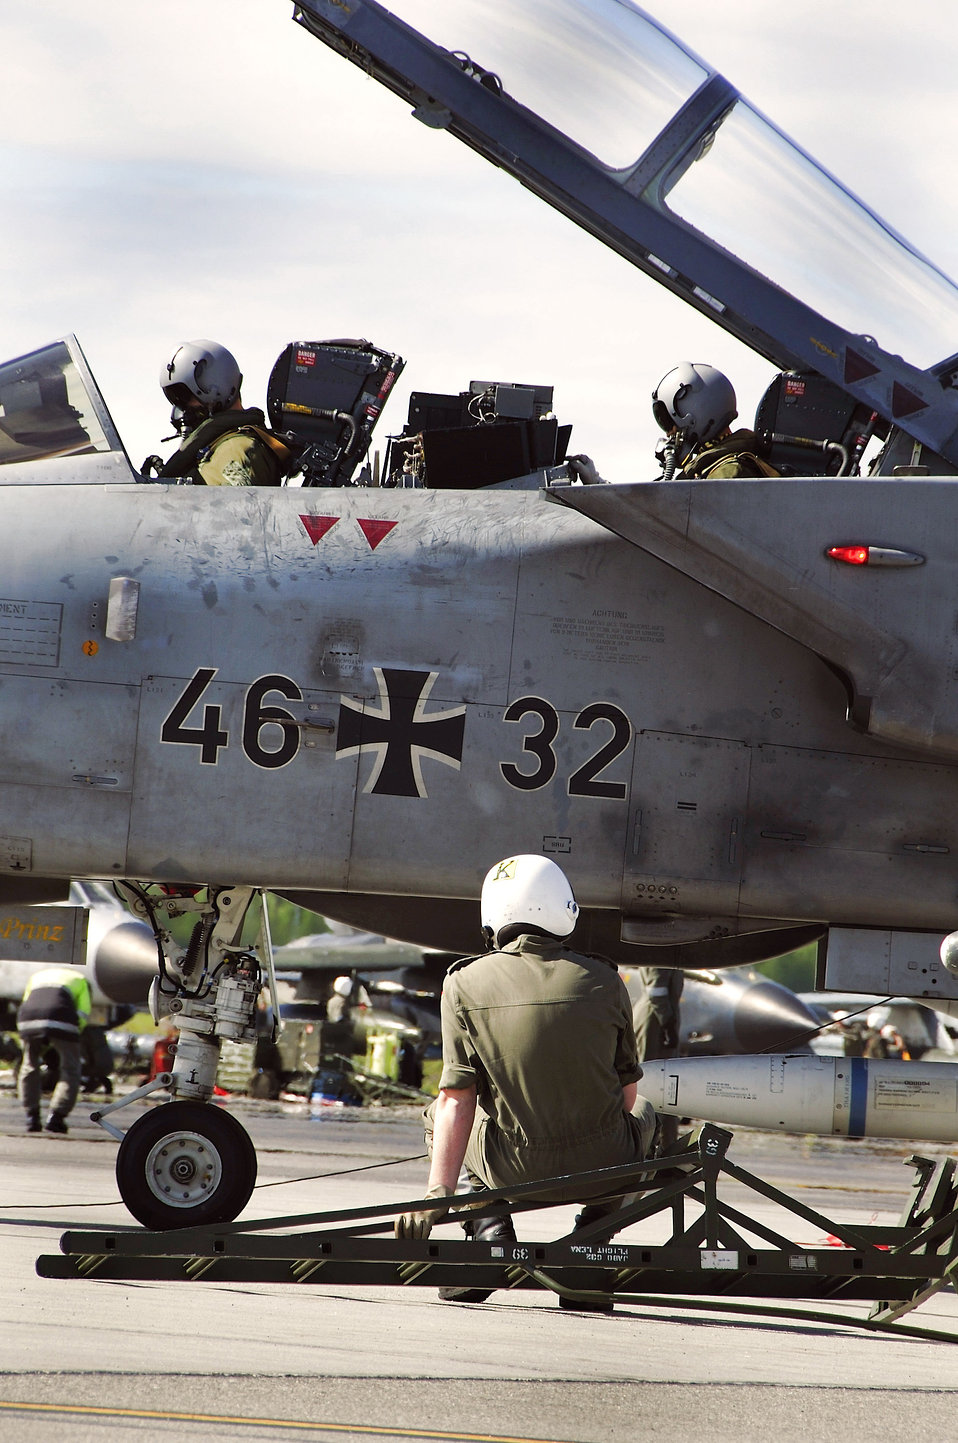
Joint training at Red Flag Alaska 08-3

Two German Air Force pilots go through a pre-flight inspection June 9 at Eielson Air Force Base, Alaska. The Germans are participating in Red Flag-Alaska 08-3, a 10-day air combat training exercise held up to four times a year over Alaskan and Western Canadian airspace. The training helps pilots, aircrews and support members overcome the differences that might arise in the area of responsibility when working with foreign countries in combat situations.